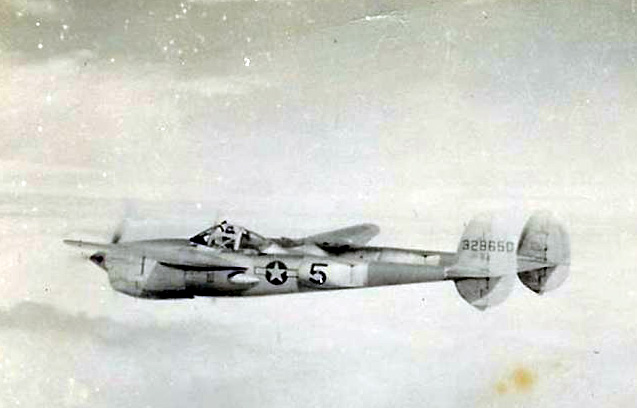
'Lightning' strikes 1st Pursuit Group

A P-38 Lightning.